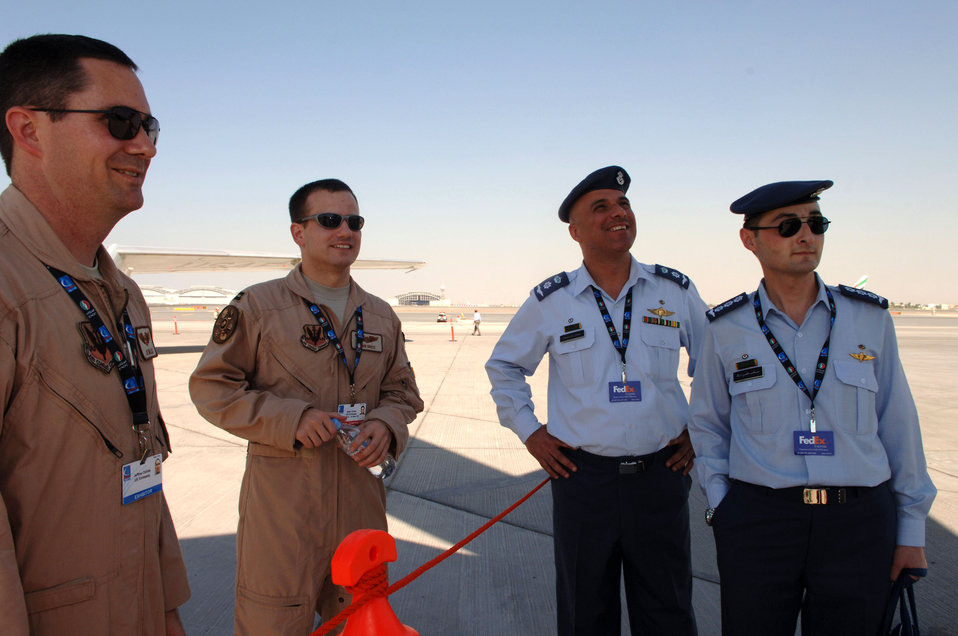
Dubai Air Show

1st Lt. Jeffery Dallas and Capt. John Dress speak with members of the Royal Jordanian Air Force Nov. 11 during the Dubai Air Show. Lieutenant Dallas and Captain Dress are E-3 Sentry AWACS aircrew members with the 552 Air Control Wing from Tinker Air Force Base, Okla. The United States military provided support for the 10th annual Dubai Air Show Nov. 11 to 15. Approximately 300 Airman, Soldiers and Sailors, and various Air Force and Navy aircraft from bases in the Persian Gulf region and the United States exhibit a snapshot of the U. S. military's diverse aircraft inventory. The air show was an opportunity to build relationships with allied partners.